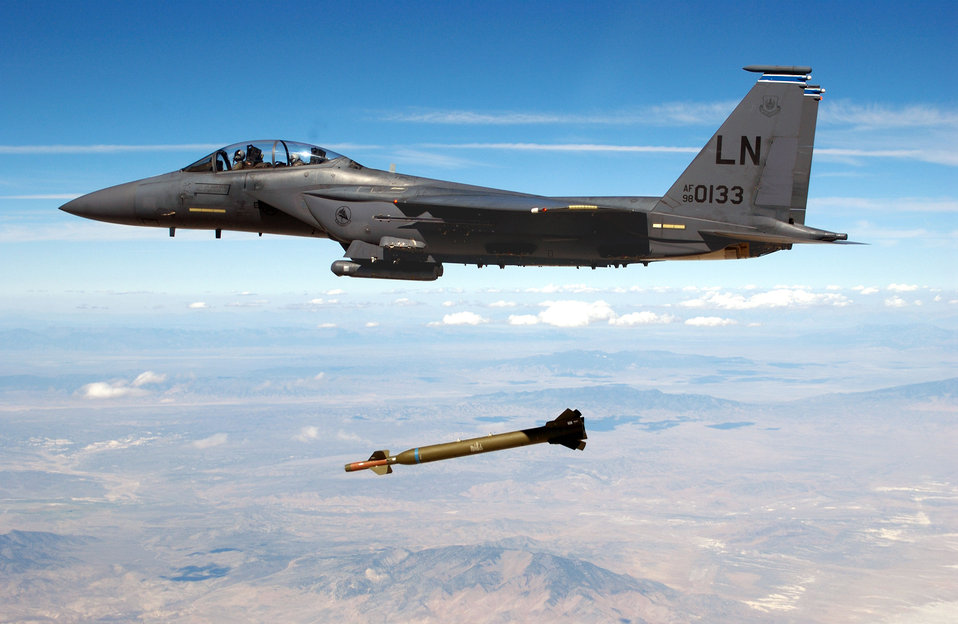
Bunker buster away

HILL AIR FORCE BASE, Utah -- An F-15E Strike Eagle deployed from the 492nd Fighter Squadron, Royal Air Force Lakenheath, England, releases a GBU-28